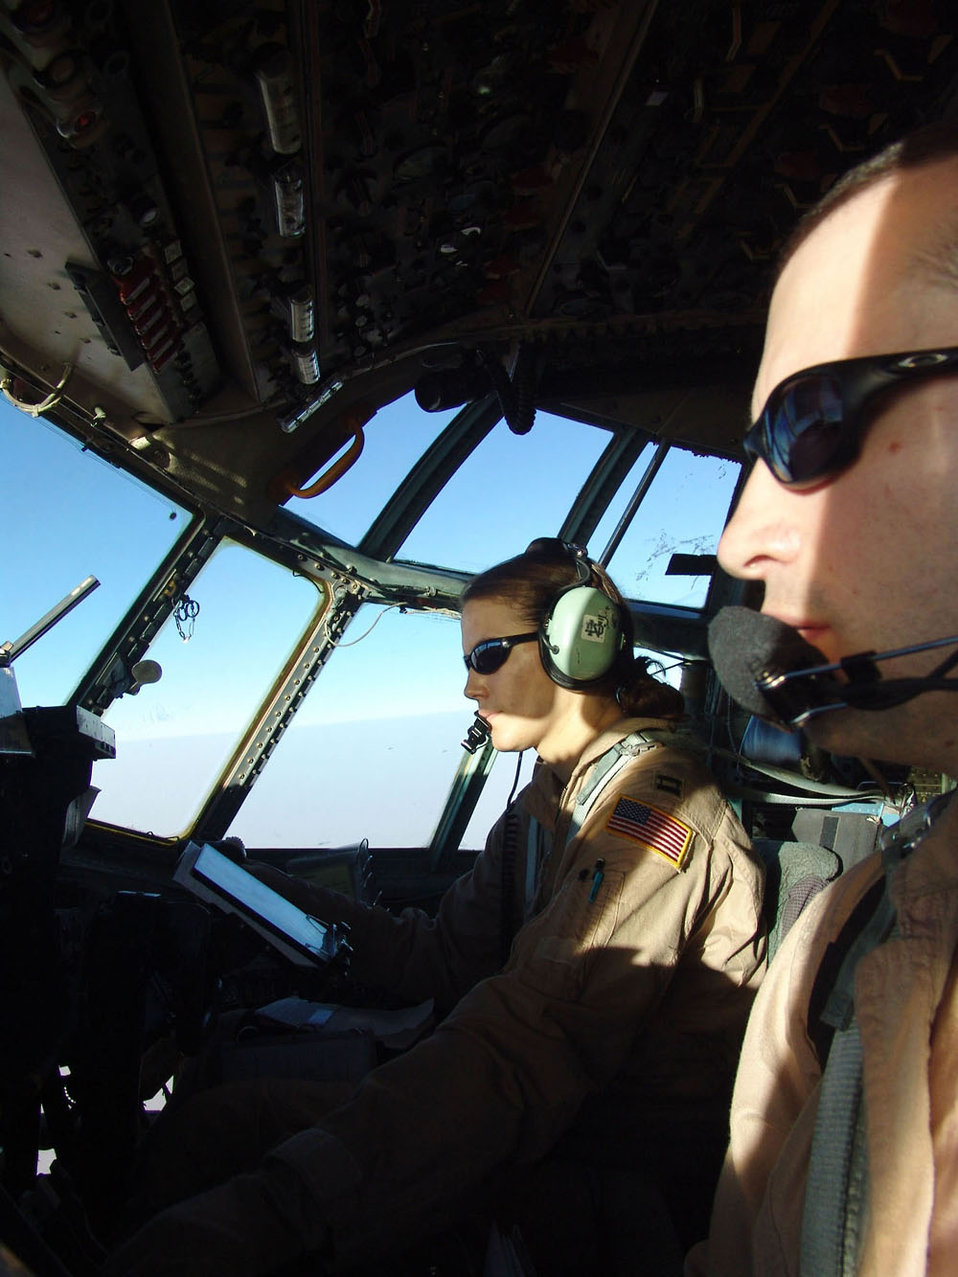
Airmen support Soldiers with airdrop

SOUTHWEST ASIA -- Capts. Jason Reed (foreground) and Anita Polsinelli prepare to launch a combat airdrop mission, delivering about 69,000 pounds of food rations for U.S. and Iraqi Soldiers engaged in combat operations against anti-Iraqi forces. The pilots are assigned to the 737th Expeditionary Airlift Squadron at a forward-deployed location and are from Pope Air Force Base, N.C.